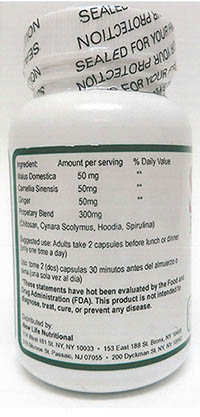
RECALLED – Dietary Supplement

March 25, 2014 – Product Recall – New Life Nutritional Center Issues Voluntary Nationwide Recall of Super Fat Burner, Maxi Gold and Esmeralda Dietary Supplements Due to the Presence of Undeclared Sibutramine and Phenolphthalein.